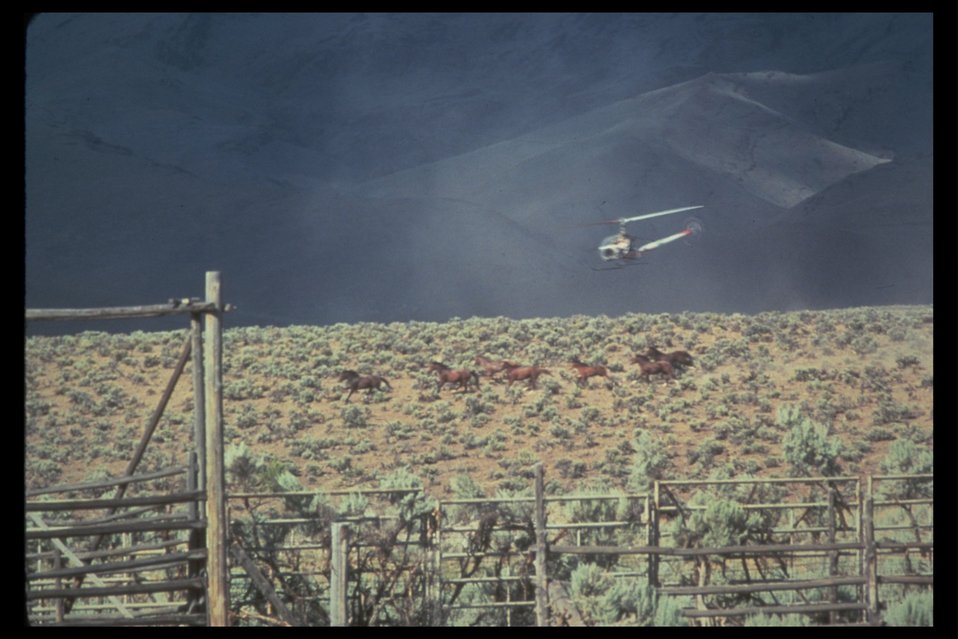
Helicopter drives horses into trap.